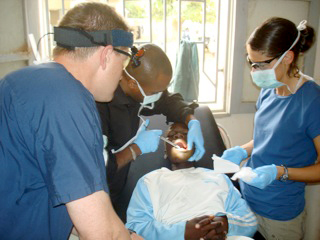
Hurlburt dental team

Captain Tad Tholstrom (far left) and Staff Sgt. Leah Potter (far right) operate alongside a local dentist while treating a patient in west Africa. The Airmen were temporarily assigned to the west Africa region in support of Exercise Flintlock, an annual exercise that focuses on improving interoperability between the militaries of the United States, Europe and northern and western African countries. Captain Tholstrom is a 1st Special Operations Medical Group dentist. Sergeant Potter is a 1st Special Operations Medical Group dental technician.